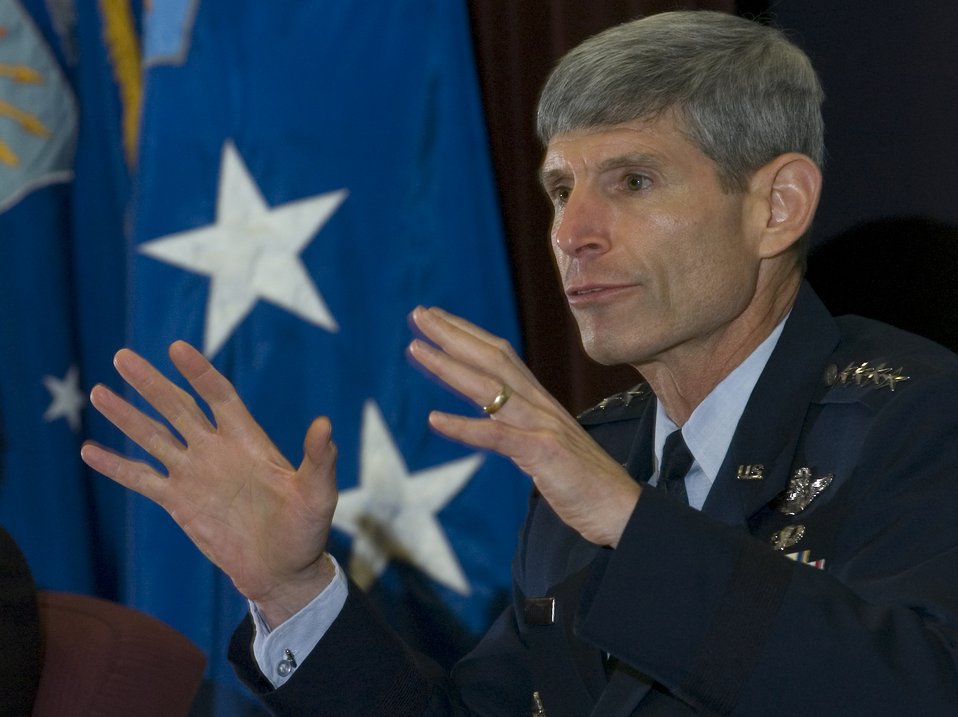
Gen. Schwartz outlines vision in speech to Omaha leaders

Gen. Norton A. Schwartz responds to a question at the Executive Leadership Forum Aug. 15 at Bellevue University in Nebraska during Air Force Week in the Heartland. General Schwartz is the Air Force chief of staff.